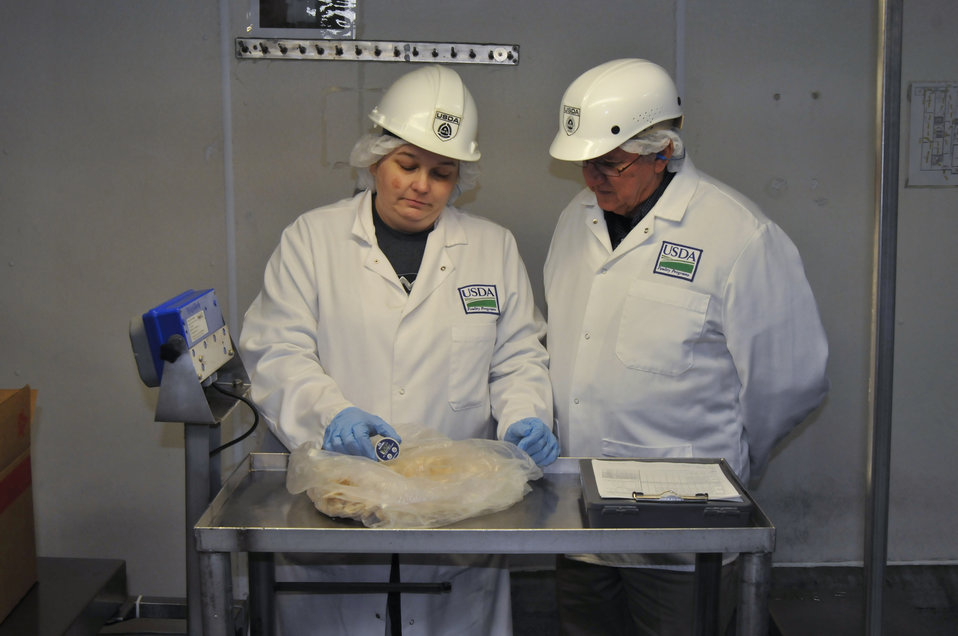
U.S. Department of Agriculture (USDA) Agricultural Marketing Service (AMS) Agricultural Commodity Compliance Specialist Melissa Thompson and AMS, Federal-State Supervisor Gary Tharp check online temperatures, examine bag for defects and product for specification criteria of a fajita poultry product at a Tyson Foods poultry processing plant in Springdale, Arkansas on March 25, 2010. Chickens, turkeys, ducks, geese, guineas, and pigeons are all eligible for grading and certification services provided by the USDA AMS Poultry Programs’ Grading Branch. These services are provided in accordance with Federal poultry grading regulations.